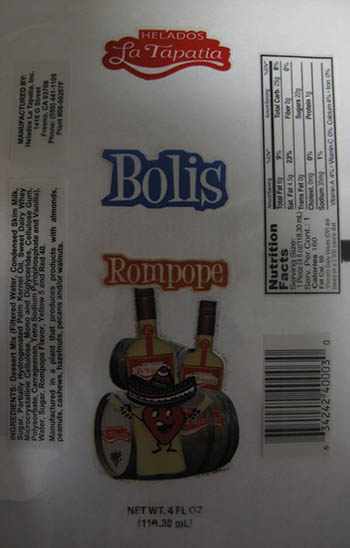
RECALLED – Ice cream products

March 19, 2014 – Product Recall – Helados La Tapatia, Inc. Recalls Products Because of Possible Health Risk.